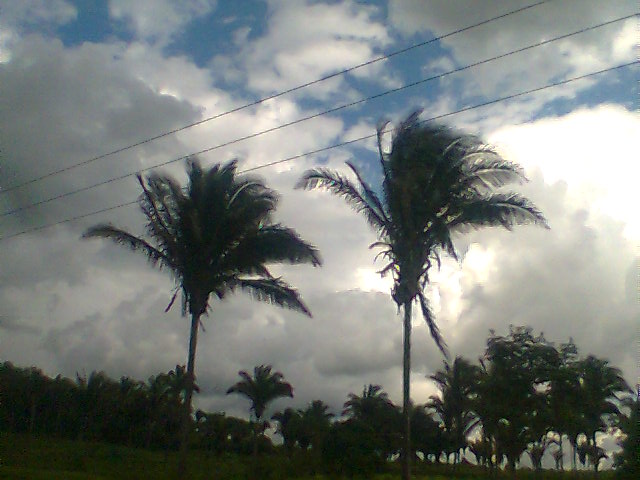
Native Brazillian Babassu palm, Attalea speciosa , near to the road of Pinheiro, Maranhão, Brazil. Português: Palmeiras de babaçu próximo à estrada de Pinheiro, Maranhão, Brasil.